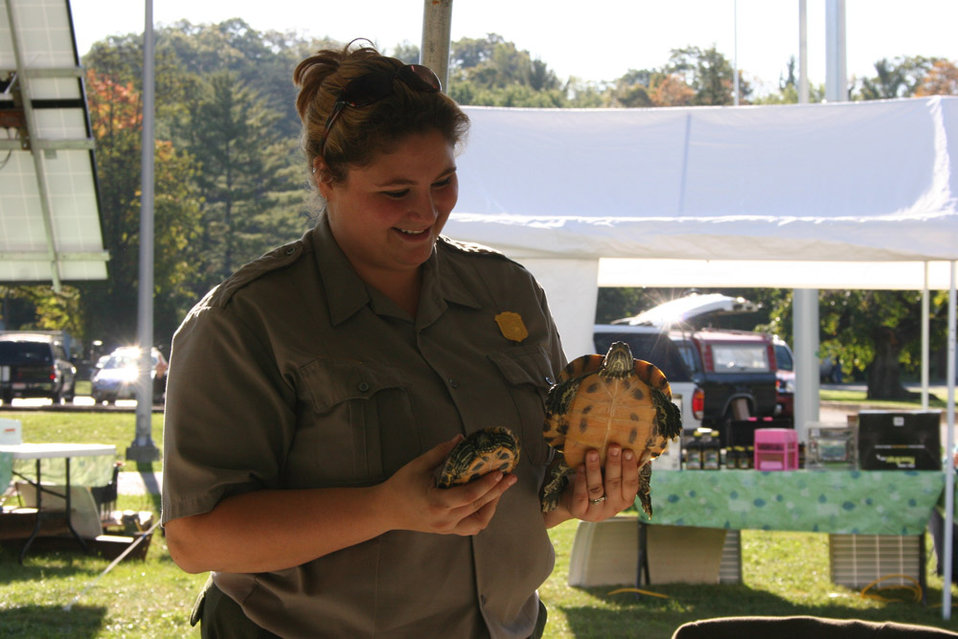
Freshwater Folk Festival (7)